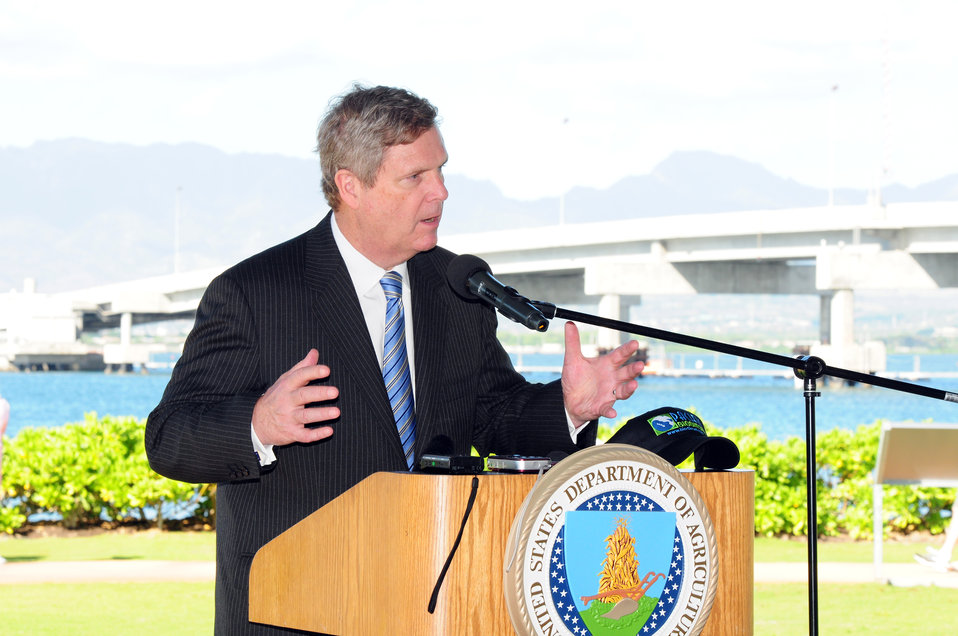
Agriculture Secretary Tom Vilsack highlights the Obama Administration's commitment to renewable energy at the.World War II Valor in the Pacific National Monument's Pearl Harbor Visitor Center. Pearl Harbor naval base was the first Hawaii military marine fleet to use biodiesel, replacing the Department of Navy-operated tour boats that shuttled visitors to and from the USS Arizona Memorial with five new boats capable of running on 100% biodiesel. Near Honolulu, HI, on Tuesday, January 10, 2012.